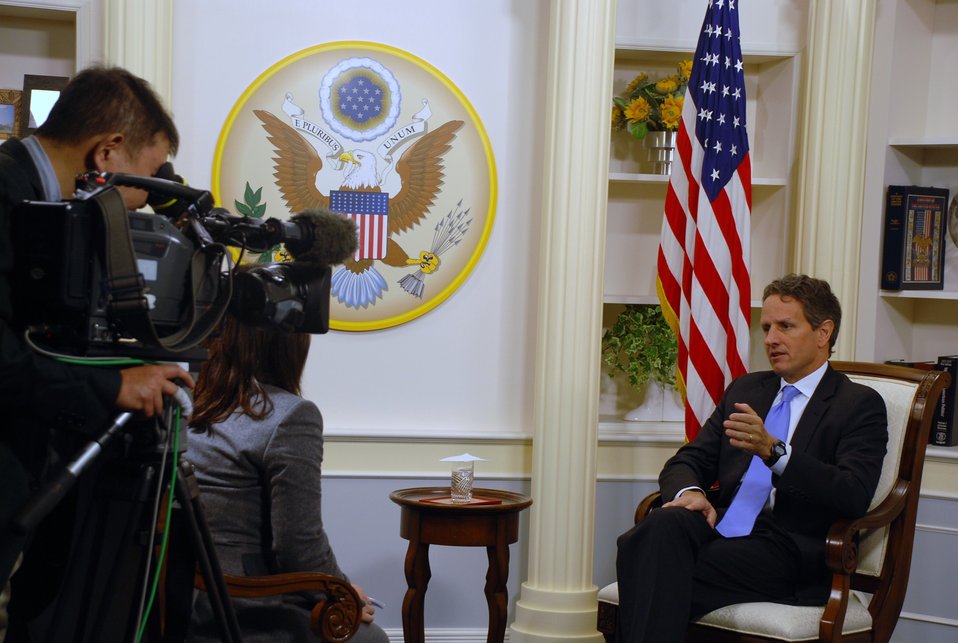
Secretary Geithner in Japan

On January 12, 2012, Secretary Geithner conducted an interview about his trip with the Japanese network NHK in Tokyo, Japan.